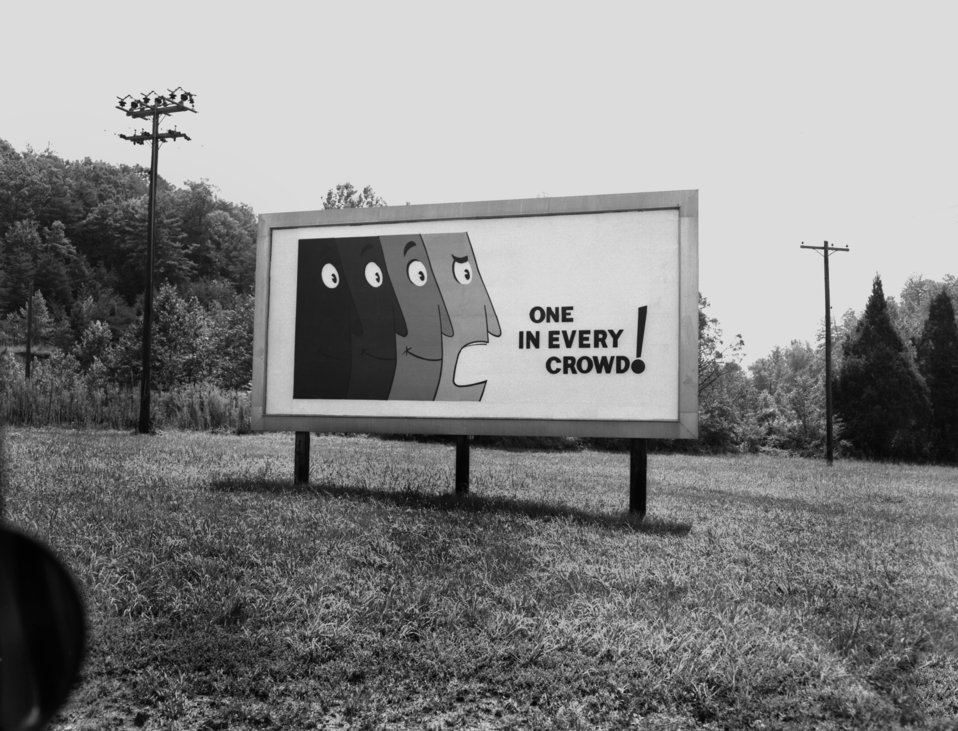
Security Billboard Oak Ridge

60-0799 DOE photo by Ed Westcott

Security Bill Board 'One In Every Crowd' Oak Ridge Tennessee 1960